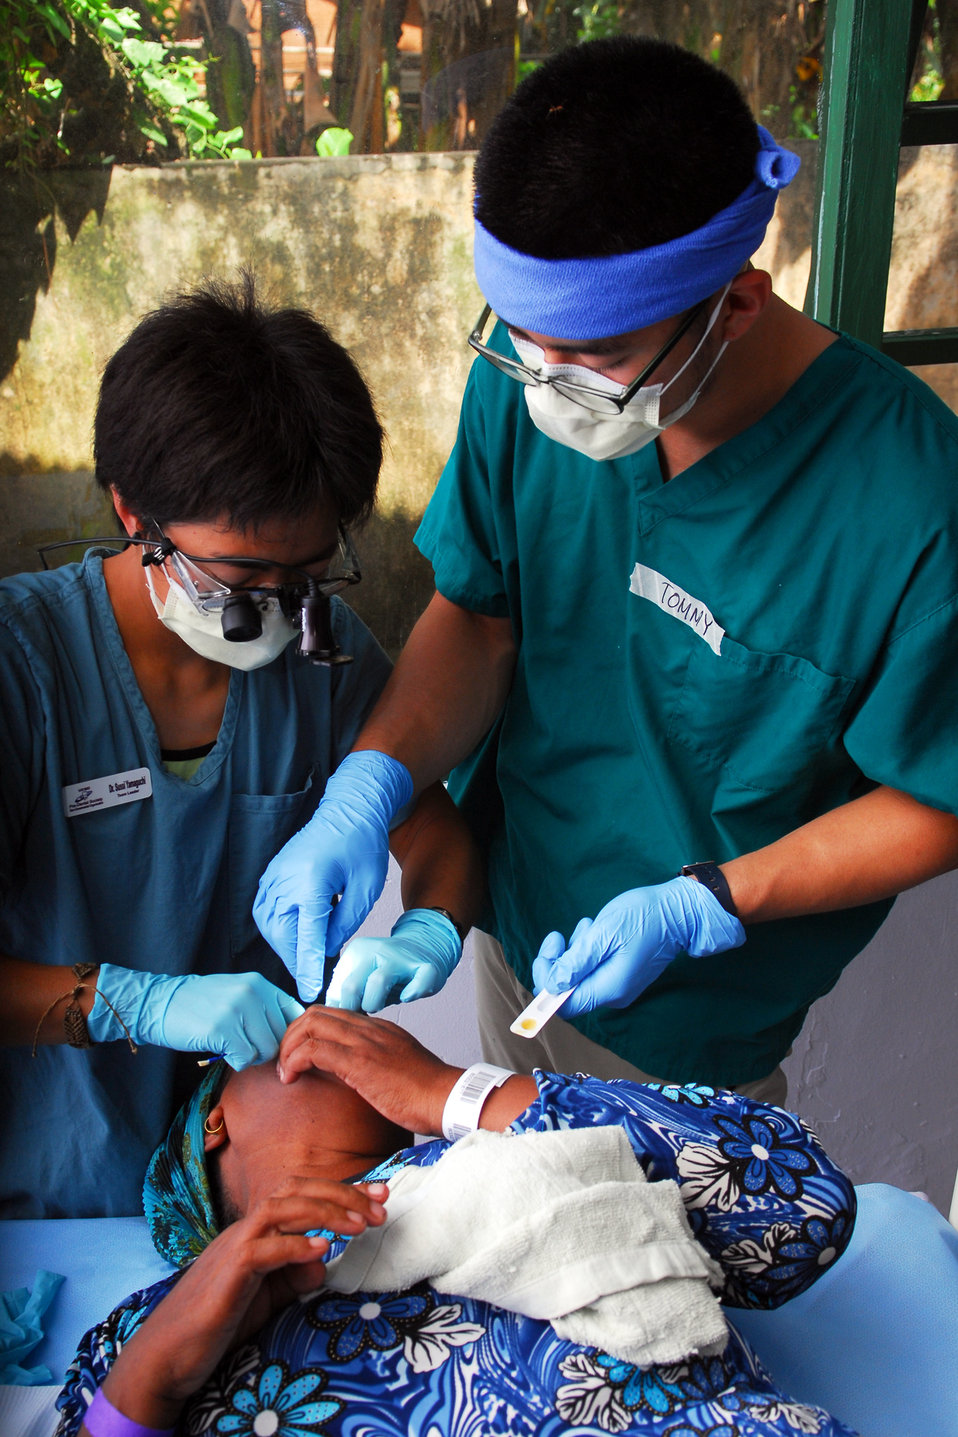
Dr. Yamaguchi Cleans a Patient’s Teeth

University of California, San Diego Pre-Dental Society dentist Dr. Sussi Yamaguchi cleans a patient’s teeth during a dental civic action program in Sulamadaha, Indonesia, on July 20, 2010. The Military Sealift Command hospital ship USNS Mercy (T-AH 19) is in the North Maluku Islands conducting Pacific Partnership 2010, the fifth in a series of annual U.S. Pacific Fleet endeavors conducted in Indonesia as a disaster relief exercise aimed at strengthening regional partnerships.